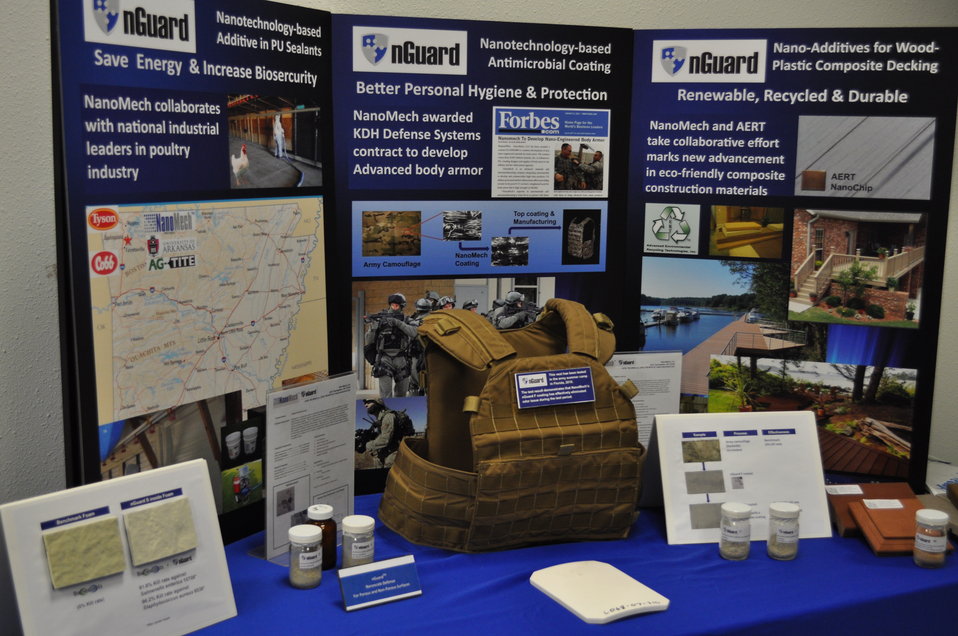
VIsit to Northwest Arkansas, 3/25/2011

NanoMech leverages nanotechnology to design a wide variety of materials and coatings, including creating lighter and higher-performance body and vehicle armor for the armed services.